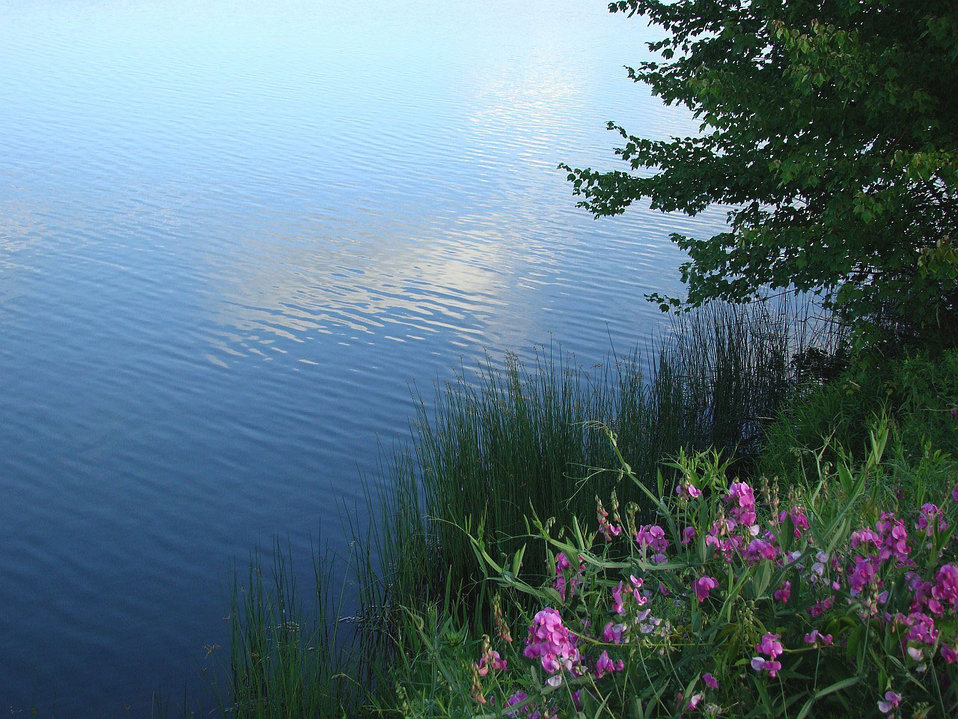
Summer time

Flora at the pond.